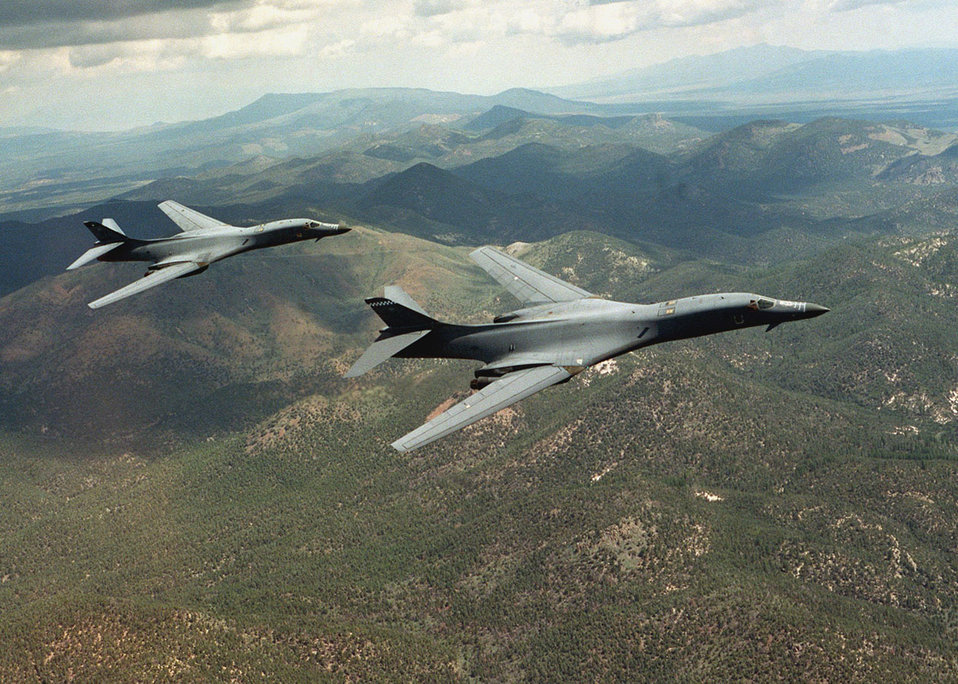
CENTAF Airpower Summary - Feb 24

B-1B Lancers, like these flying a training mission, provide close-air support for coalition troops in contact with enemy forces in Iraq and Afghanistan. The B-1B can carry the most firepower of any U.S. Air Force aircraft and can carry multiple varieties of multiple weapons on the same airplane. This gives the combatant commander tremendous lethality in support of the war on terrorism.